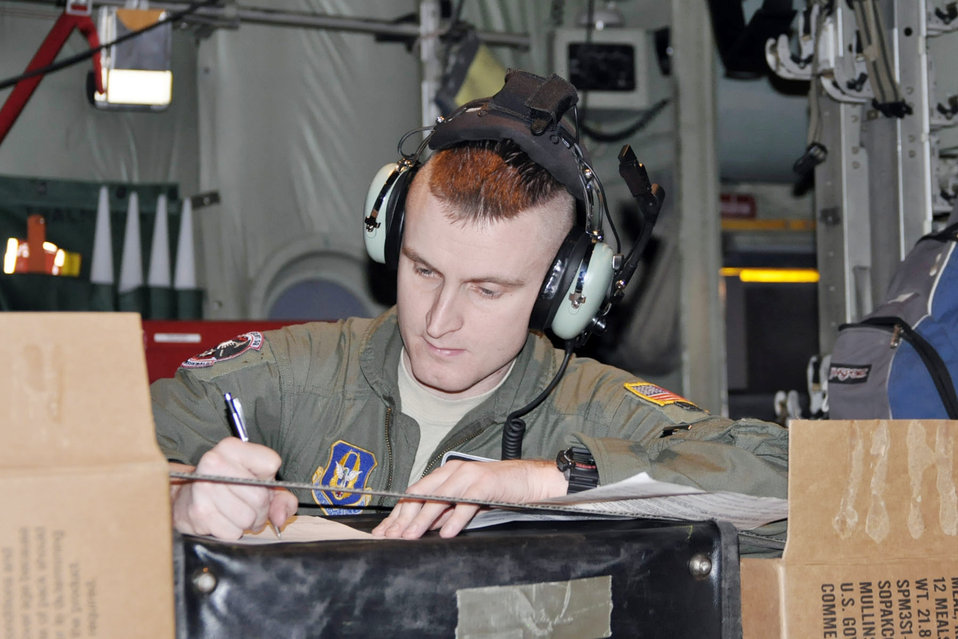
Medical mission to Haiti

Staff Sgt. Michael Culp fills out customs declaration forms aboard a C-130H Hercules on an airlift mission over the Caribbean Sea Jan. 17, 2010, in support of Haitian relief efforts. Sergeant Culp, a loadmaster assigned to the 773rd Airlift Squadron, is one of two loadmasters responsible for aircraft payload on the 12-person crew. The crew is attached to Air Force Reserve Command's 910th Airlift Wing based out of Youngstown Air Reserve Station, Ohio, bound for Soto Cano Air Base, Honduras, to pick up cargo.